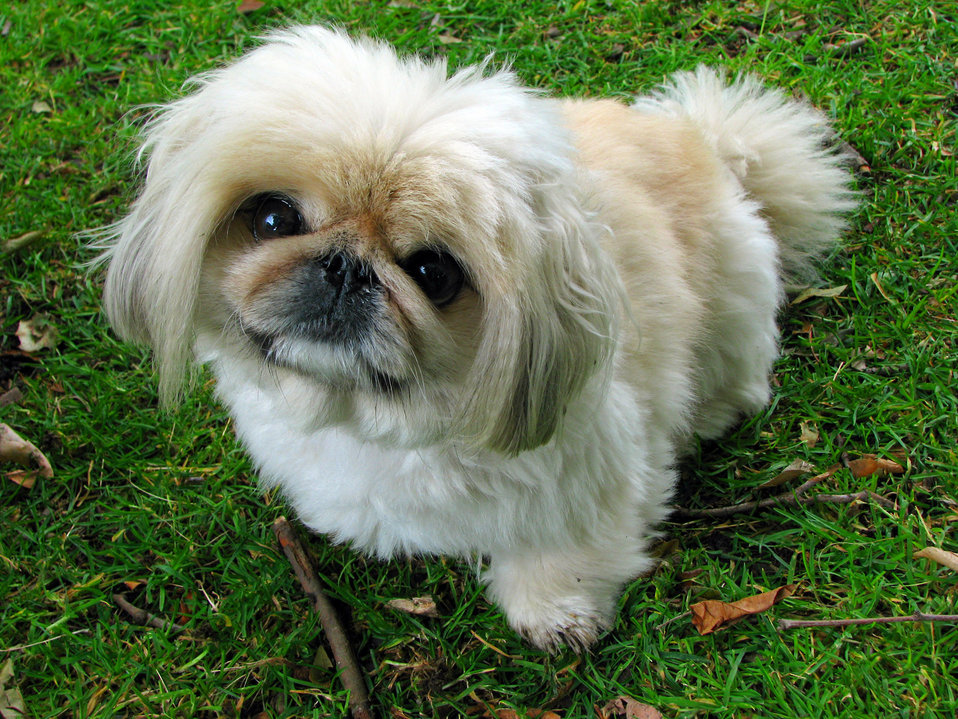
Pekingese dog

Close-up portrait of a pekingese dog.